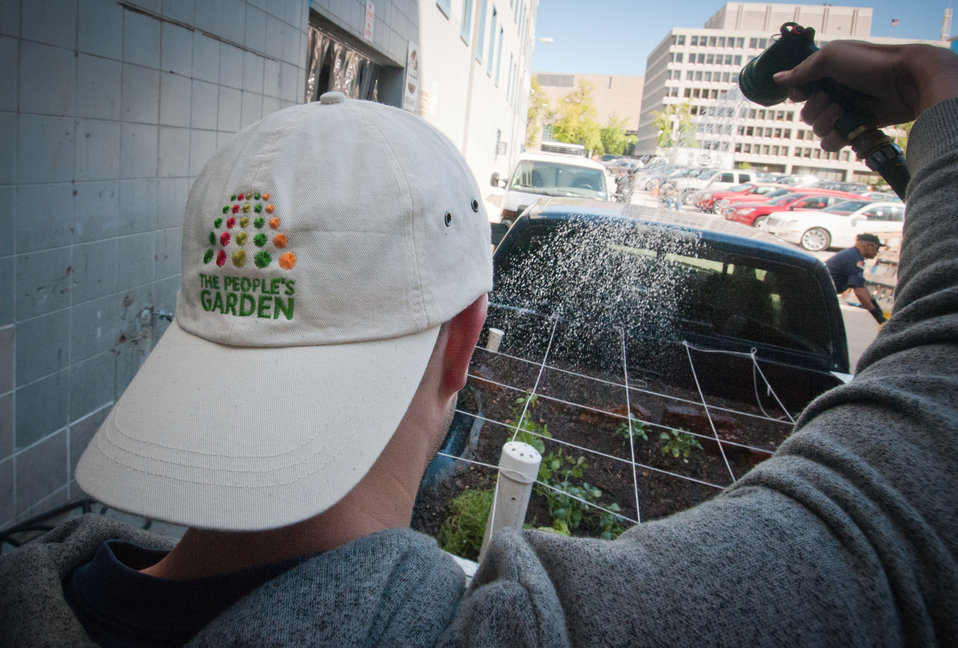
D.C. Central Kitchen’s, The Campus Kitchens Project’s Matt Schnarr sprays a gentle shower of water on the freshly planted Truck Farm in Washington, D.C. on Friday April 6, 2012. This Truck Farm is a D.C. Central Kitchen and U.S. Department of Agriculture People’s Garden Initiative partnership that, like other Truck Farms around the country, will travel around the city to schools and community sites, teaching children about healthy eating and where their food comes from through the garden display in its truck-bed. Along with other local donors, the People’s Garden Initiative supports this “edible exhibit” by providing seedlings and educational materials. Mr. Schnarr is on staff with D.C. Central Kitchen for one year as part of AmeriCorps VISTA service.